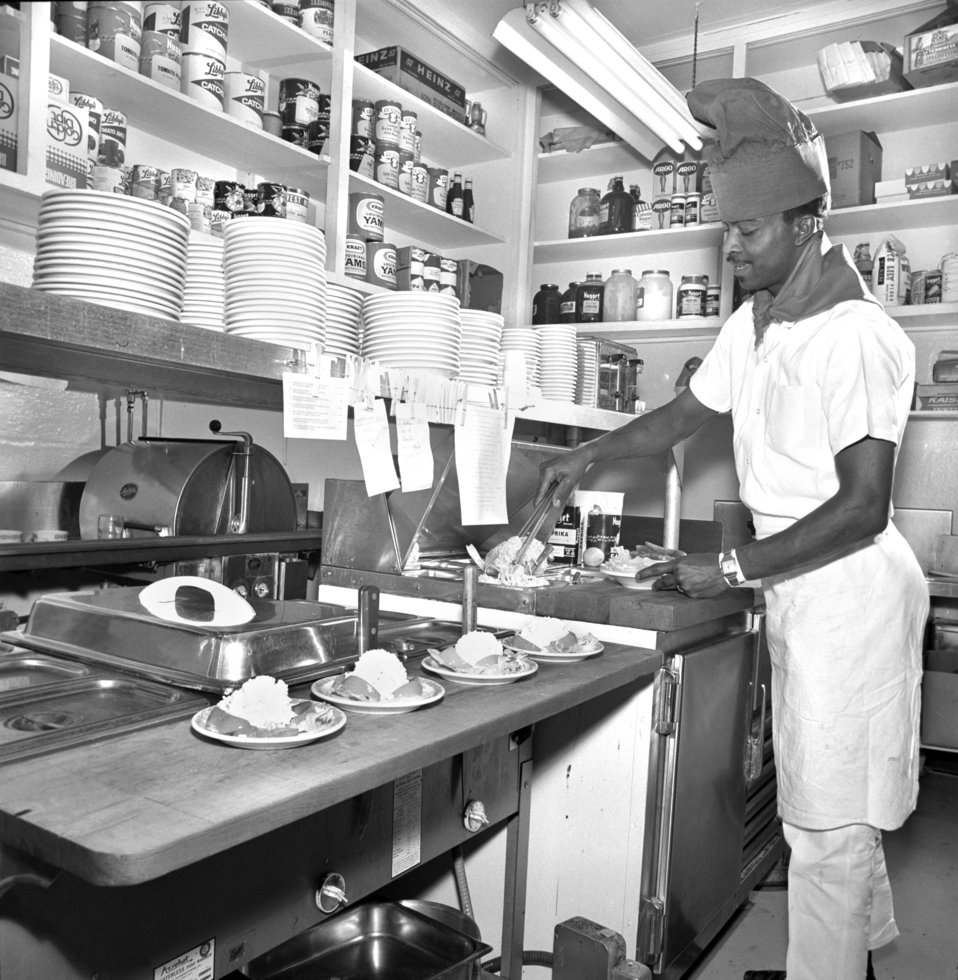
Chief at Work Oak Ridge 1968

68-580b DOE photo Frank Hoffman 11-25-1968 Oak Ridge Tennessee